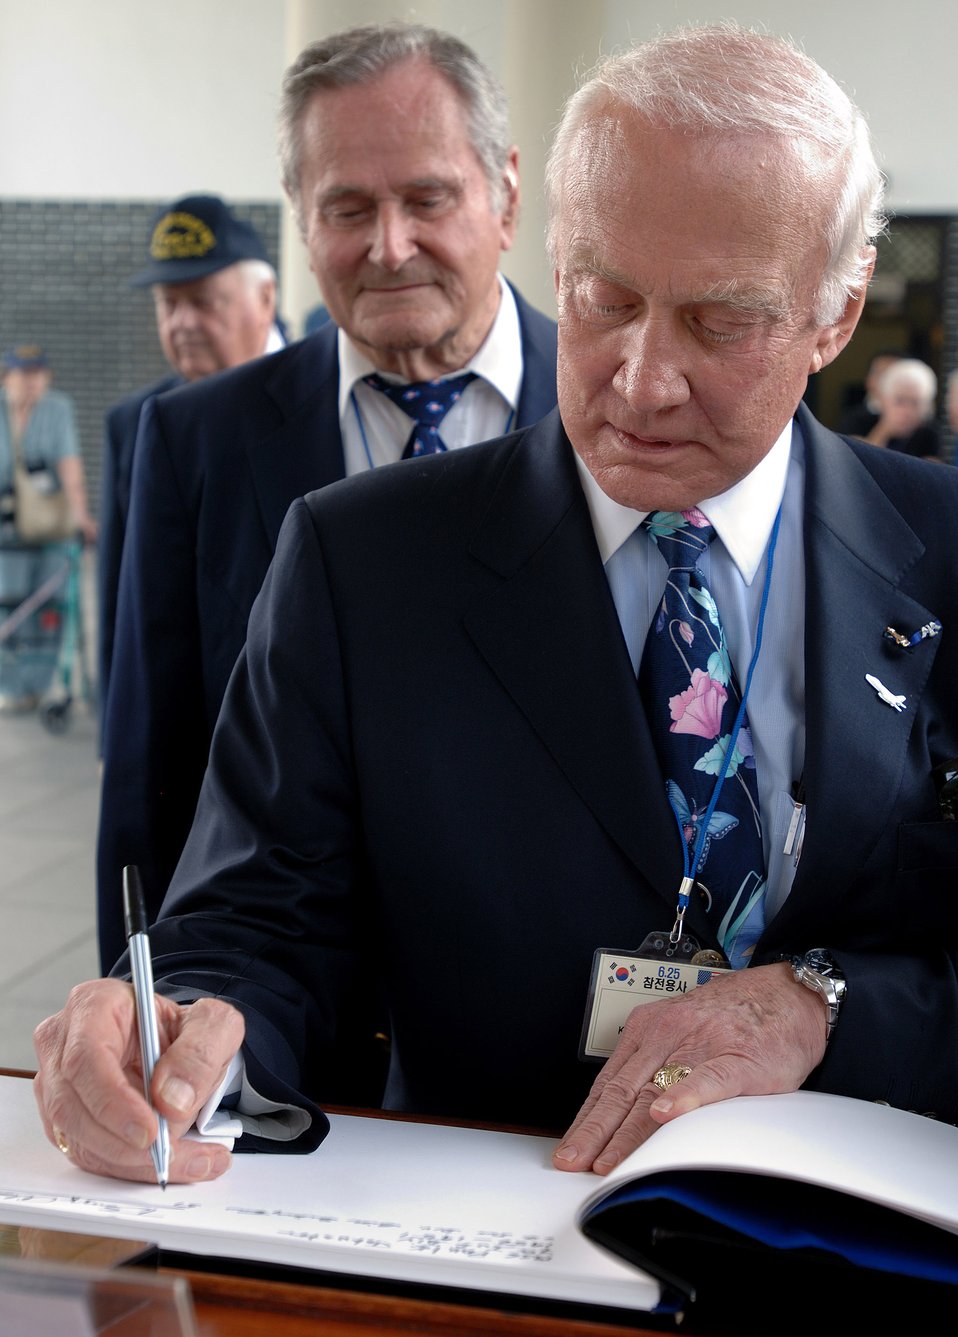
Korean War veterans give sage advice to Airmen

Apollo 11 astronaut and retired Col. Buzz Aldrin signs a guest book after a wreath-laying ceremony at the South Korean National Cemetery Sept. 12. Colonel Aldrin is a veteran of the war and is credited with two confirmed MiG kills while flying the F-86 Sabre.